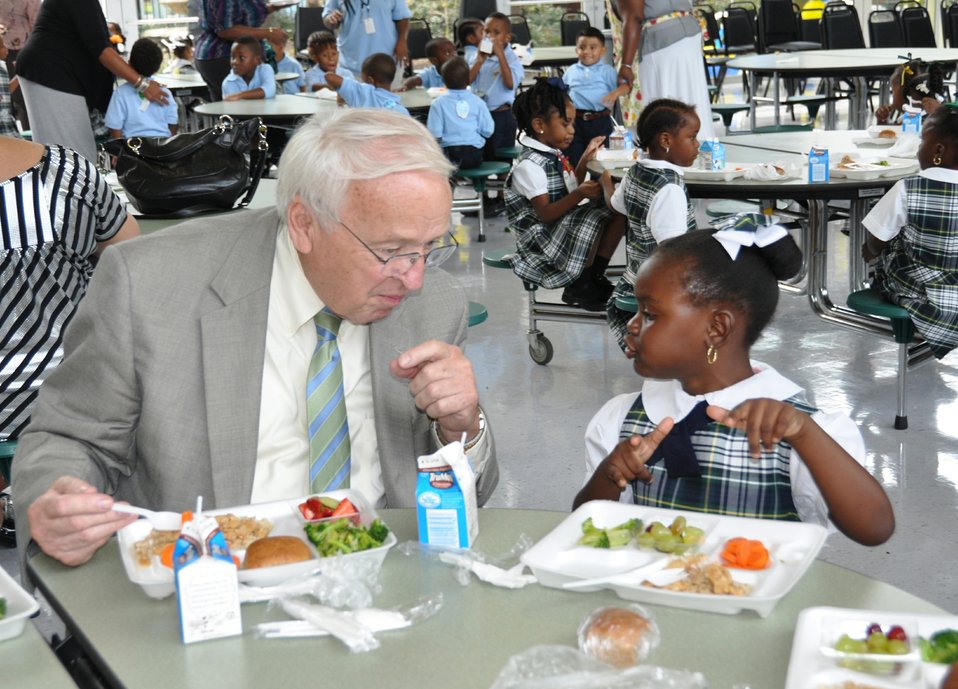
Agriculture Under Secretary for Food, Nutrition, and Consumer Services Kevin Concannon shares a healthy lunch with a kindergarten student at Mahalia Jackson Elementary School in New Orleans, LA., on Aug. 21, 2012. Students can expect healthier and more nutritious food in school due to the passage of the Healthy, Hunger Free Kids Act. This Act enables the U.S. Department of Agriculture’s (USDA) Food Nutrition Service (FNS) to nationally advance major improvements by transforming school food and promoting better nutrition and reducing obesity.